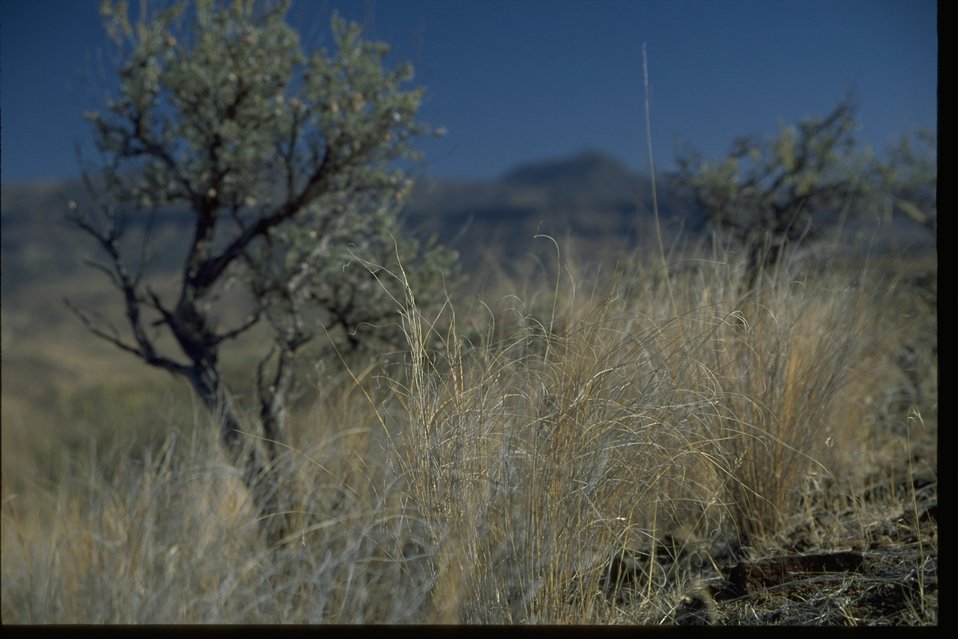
View of upland vegetation: sage grass.